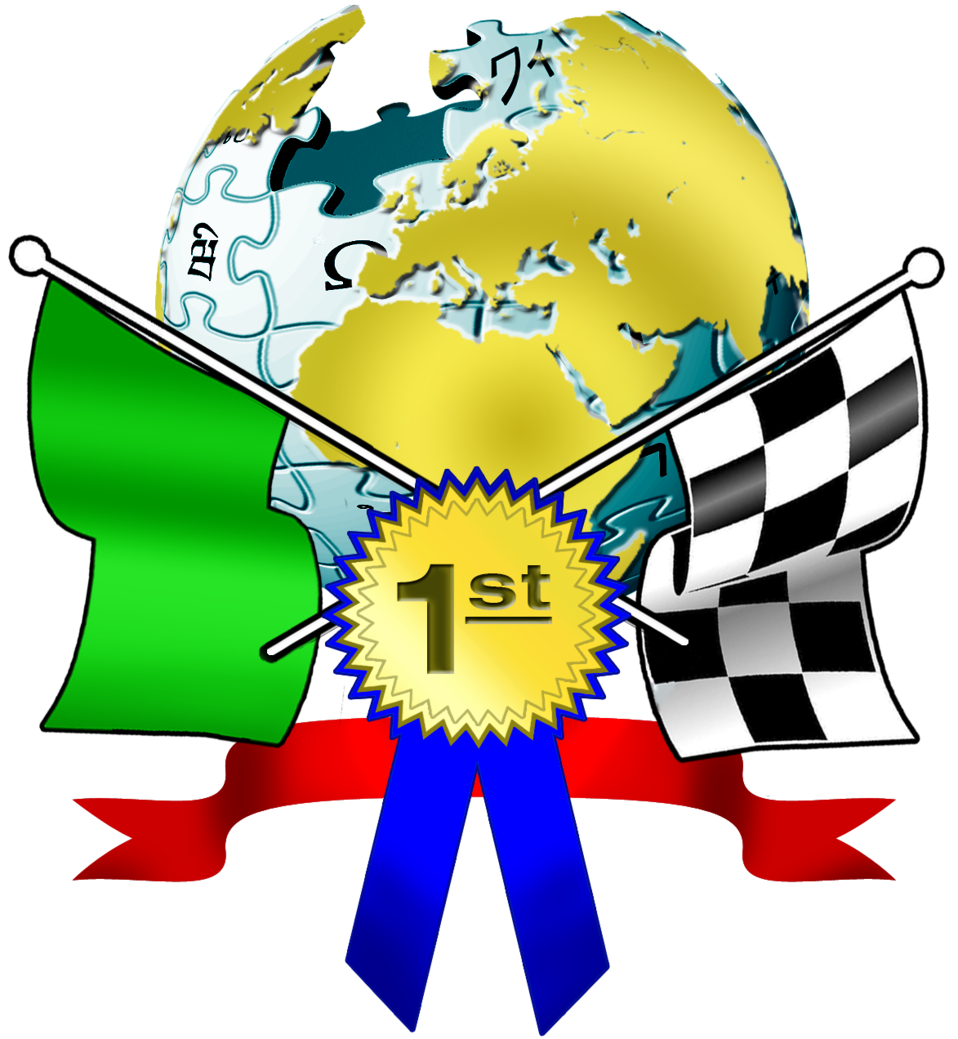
The Grand Prize for the winner of a geography race